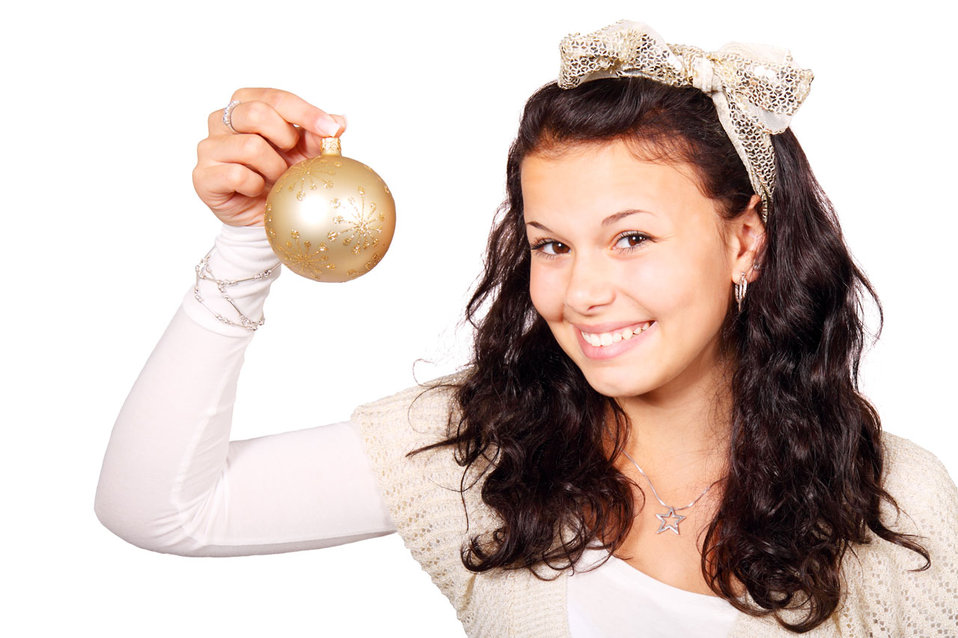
Woman with christmas bulb

Young woman with golden christmas bulb.